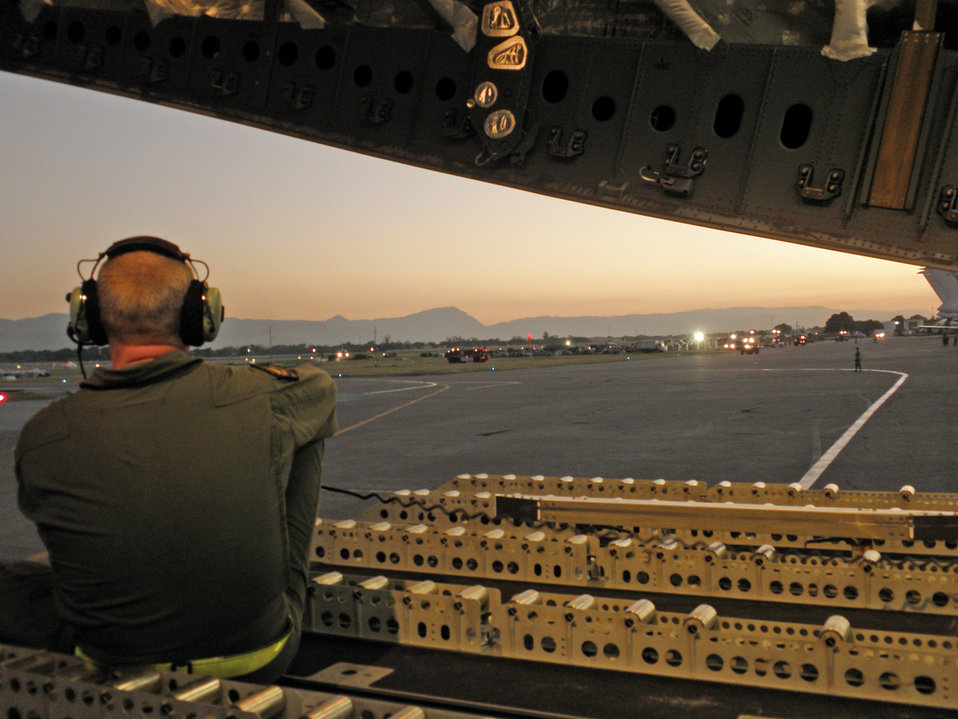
Multinational aid delivered to Haiti

Norwegian air force 1st Lt. Jan Barre Prestbakmo gives directions to the pilot as his C-17 transport aircraft backs up in preparation for takeoff from the main airport at Port-au-Prince, Haiti, Jan. 18, 2010. The aircraft and multinational aircrew had just delivered 15 pallets of material to construct a headquarters for aid workers at the airport. The air relief is being delivered in response to a massive earthquake that struck Haiti Jan. 12, 2010. This is the first humanitarian assistance operation flown by the Heavy Airlift Wing since it stood up in July 2009. The wing is a multinational force made up of airmen from 12 nations. Lieutenant Prestbakmo is a loadmaster for the Heavy Airlift Wing out of Papa Air Base, Hungary.